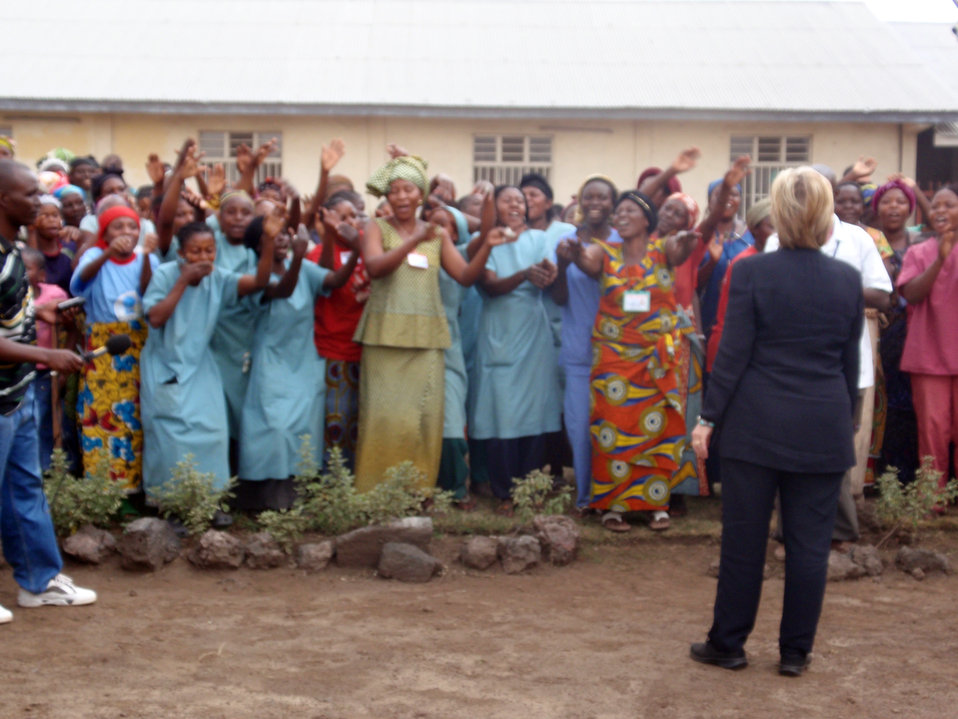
Secretary Clinton Visits Heal Africa Facilities in Goma

U.S. Secretary of State Hillary Rodham Clinton is greeted as she arrives at the Heal Africa facilities in Goma, Democratic Republic of Congo August 11, 2009.